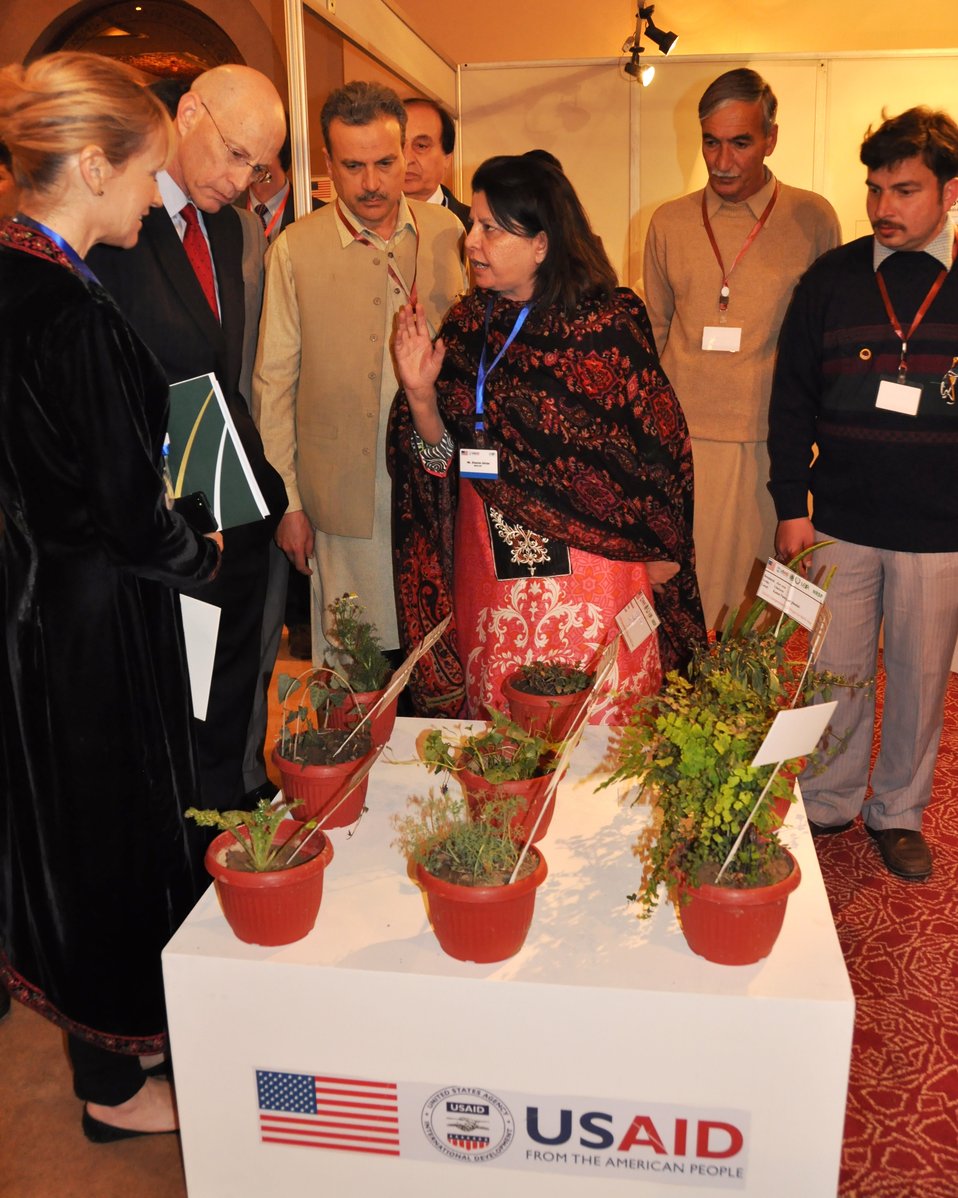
Industry Conference on Medicinal and Aromatic Plants and Honey by Entrepreneurs Project

USAID’s Mission Director, Gregory Gottlieb while being briefed about various kinds of plants from Entrepreneurs Project Officials.